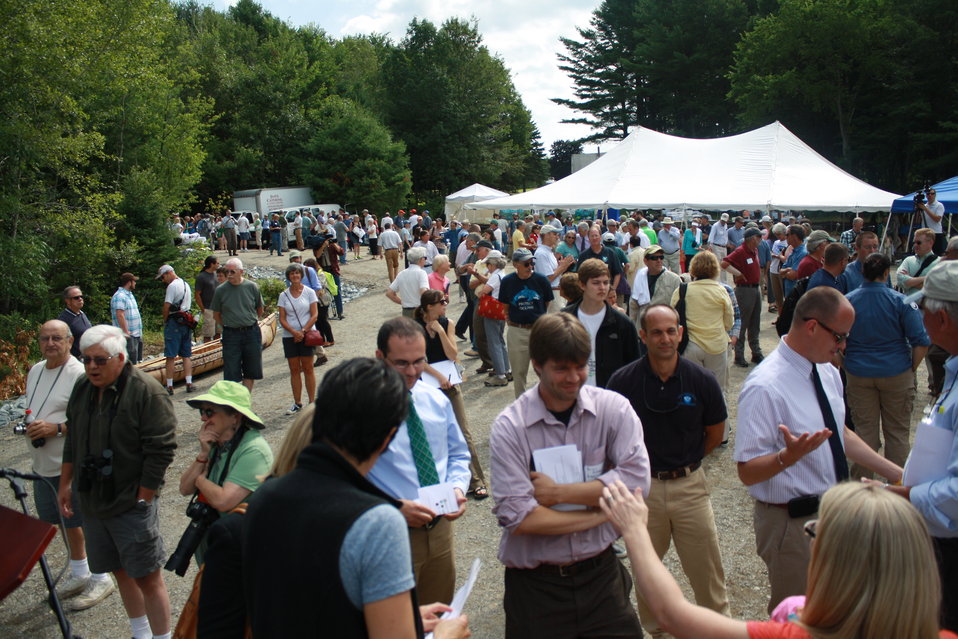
Veazie Dam Removal

People gathering in front of the stage before the press conference.